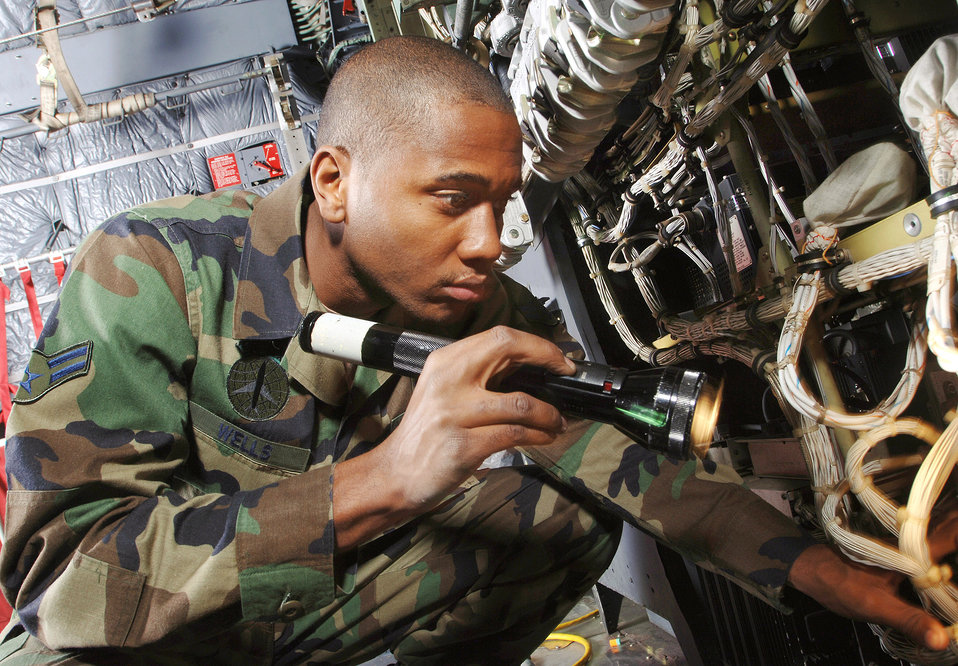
Avionics check

YOKOTA AIR BASE, Japan -- Airman 1st Class Marlon Wells uses a flashlight to visually inspect the avionics system in the cargo bay of a C-130 Hercules aircraft here. Airman Wells is looking for chaffed, frayed and disconnected wires to prevent system failure. He is a C-130 crew chief from the 374th Maintenance Squadron/ isochronal section here at Yokota Air Base, Japan.